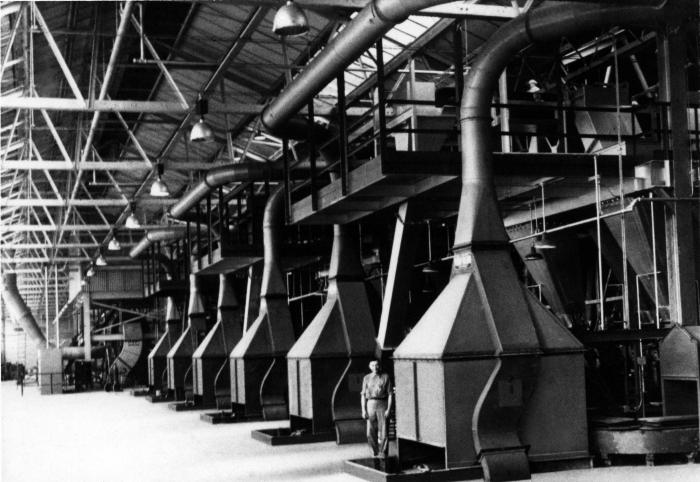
Thought to be from the 1970s, this historic image was provided by the Center for Disease Control's (CDC), National Institute for Occupational Safety and Health (NIOSH). The photograph depicted a single industrial worker who was standing inside a large factory, the purpose of which is not able to be determined from this image. However, you'll note the presence of six ventilation units, which kept the air free of potentially harmful airborne particulates. The man himself, was not wearing a filtered breathing device, though the air quality may have been sufficiently clean to alleviate the need to wear such protection.